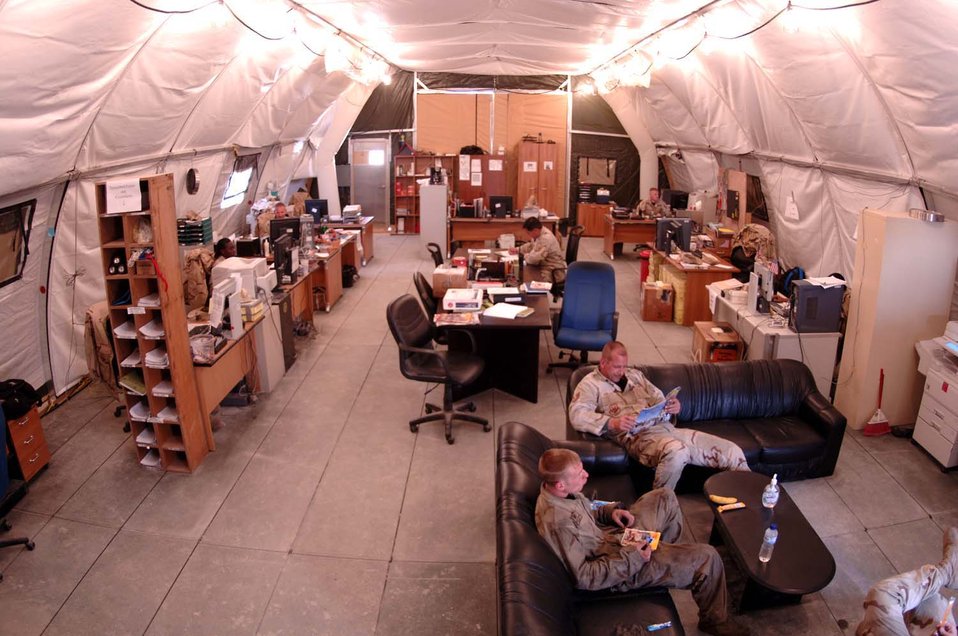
C-130 maintenance unit gets much needed upgrade

The 746th Aircraft Maintenance Unit temporarily works out of a tent while four more tents are set to be constructed along the Coalition Ramp. The new facility will be approximately double the square footage of the old complex. The 746th AMU will now have extra room to store and organized equipment and supplies. The maintainers have met a demanding flying schedule while working from their transition facility.